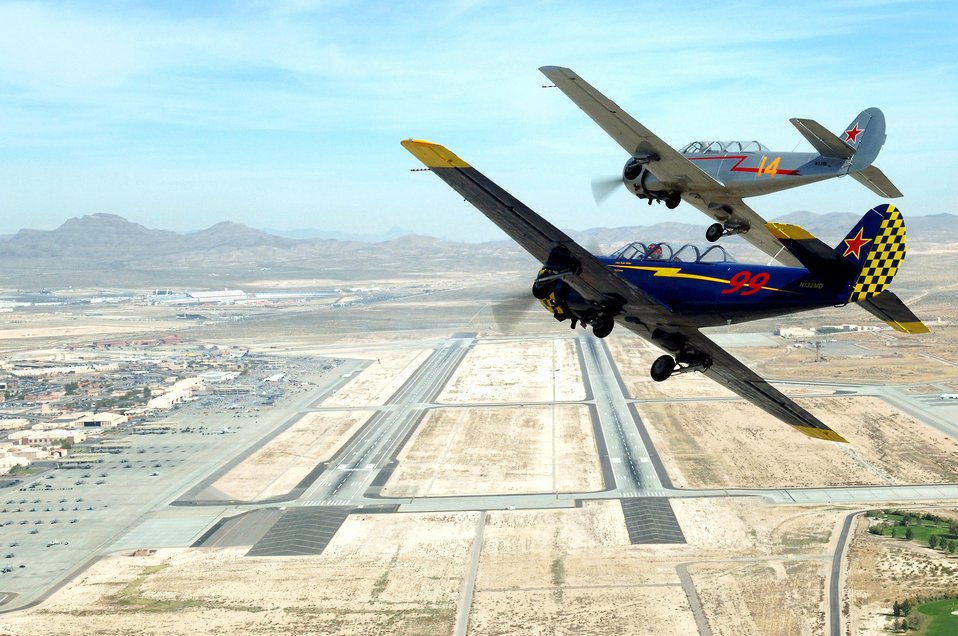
2005 air show Nellis AFB Nevada

NELLIS AIR FORCE BASE, Nev. (AFPN) -- Duke Molter (bottom) and Gordon Witter prepare their Yak-52's for final approach during the Aviation Nation 2005 air show. Mr. Molter and Mr. Witter are with the Cojones Formation Team. This year's event, held Nov. 12 and 13, was dedicated to Vietnam War veterans with a special welcome home tribute. It drew more than 150,000 spectators.